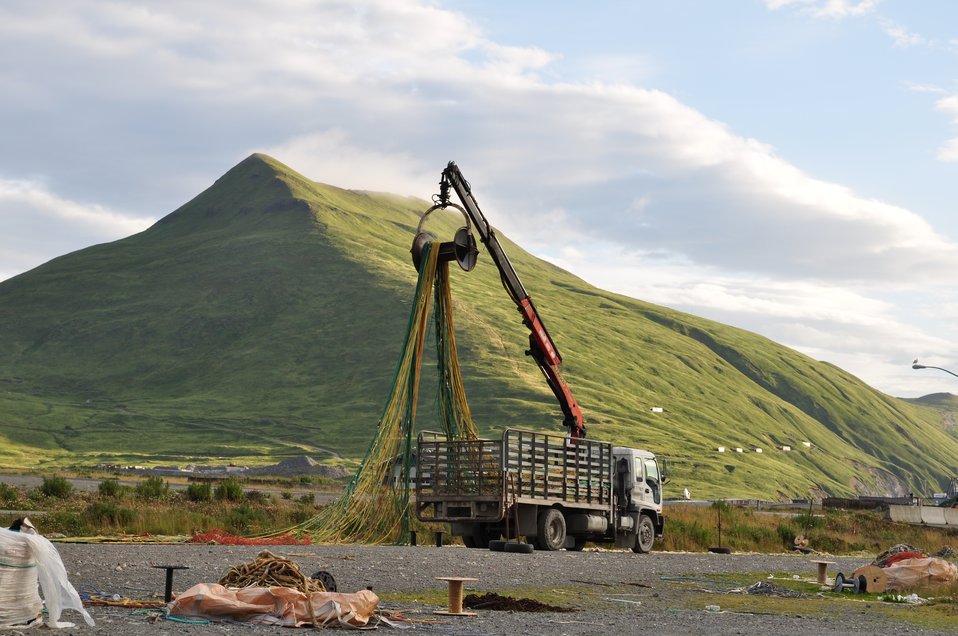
Mending nets below Mount Ballyhoo.